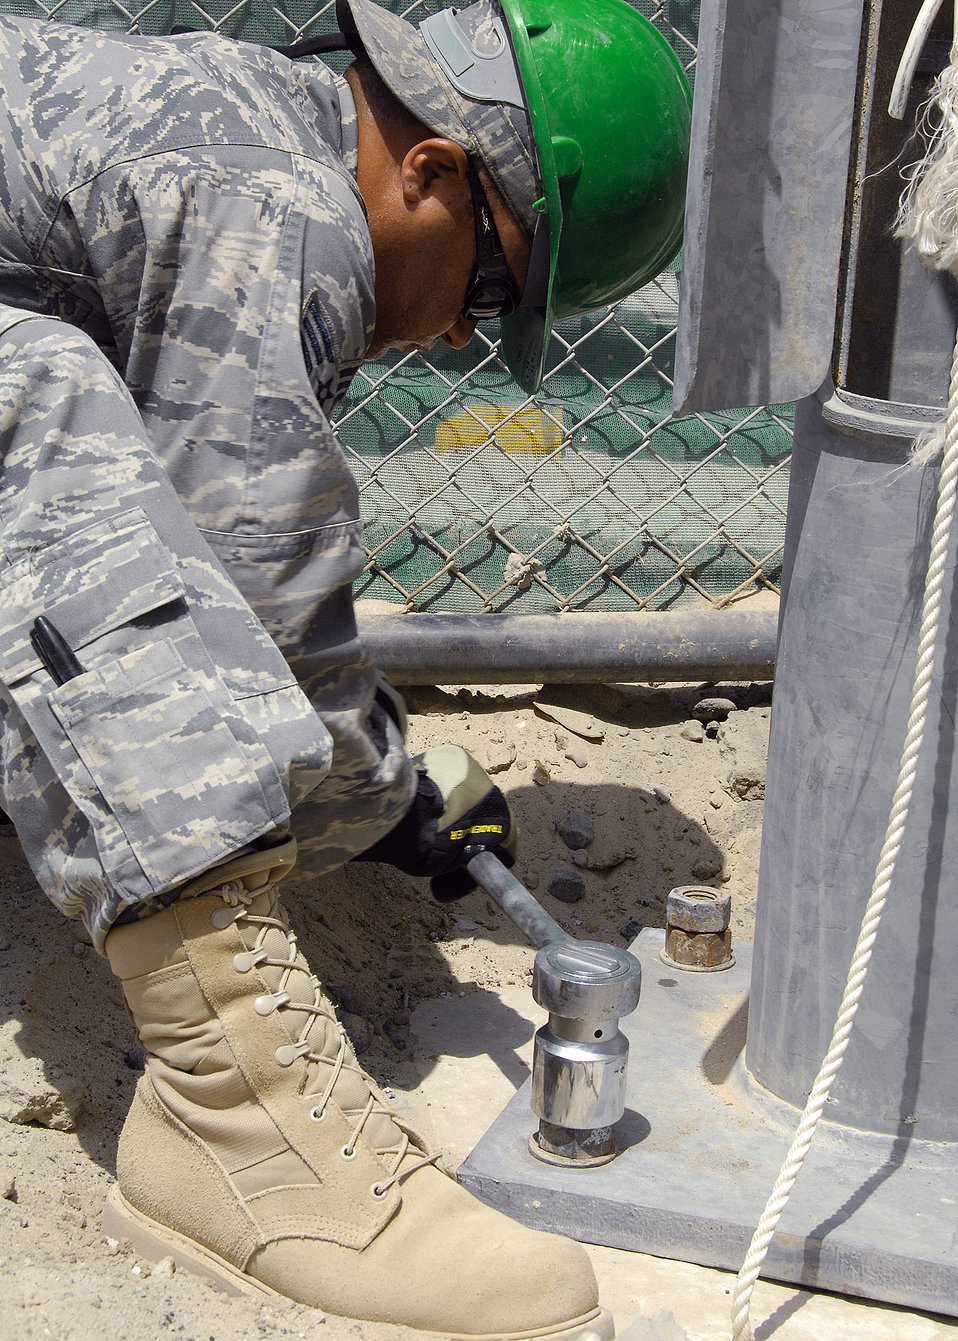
Keeping the lights on

Senior Airman Jose Lozadacosme tightens down bolts on the base of a light pole on Aug. 23 at an air base in Southwest Asia. The installation replaced wind-damaged poles in the South Korean air force compound, and was a joint effort between U.S. and South Korean Airmen. Airman Lozadacosme is deployed from the Puerto Rico Air National Guard, and and he is assigned to the 386th Expeditionary Civil Engineer Squadron.